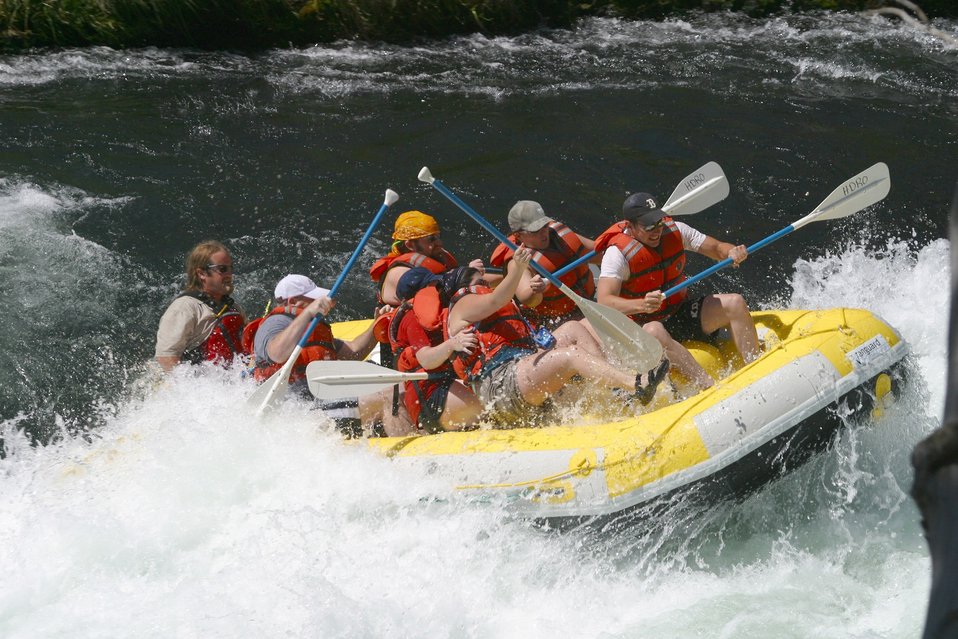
Oak Springs is a Class IV Rapids. The left channel has shallow rocks, large standing waves, turbulent currents and a large hole during high flows. The right channel has a large hole, shallow rocks, and turbulent currents. 7/26/03 Pelton Dam 3600 cfs: Moody Rapids 4300 cfs.